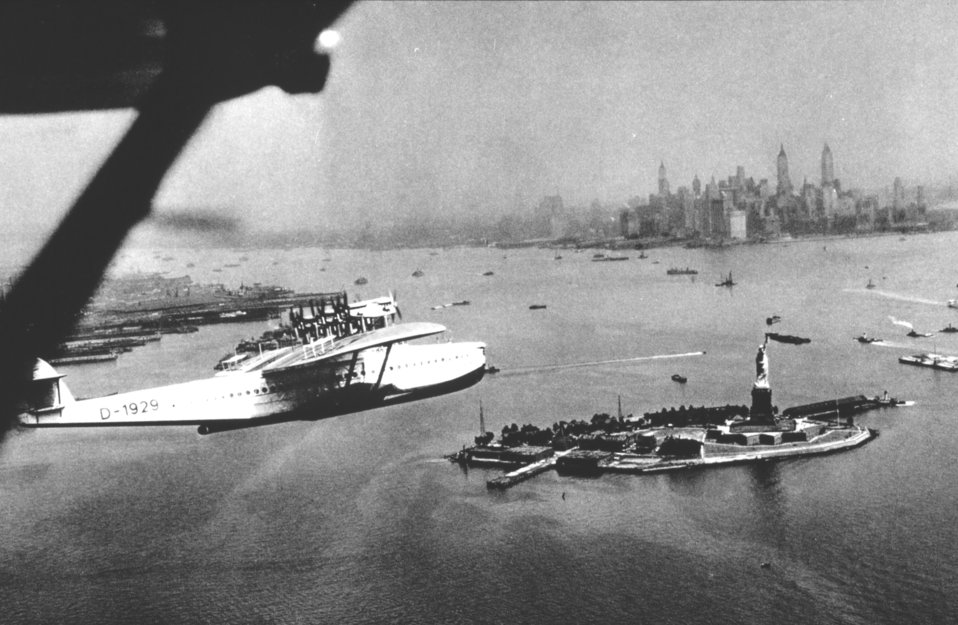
A flying boat on arrival at New York passing over the Statue of Liberty. In: 'Flug Und Wolken', Manfred Curry, Verlag F. Bruckmann, Munchen, 1932.